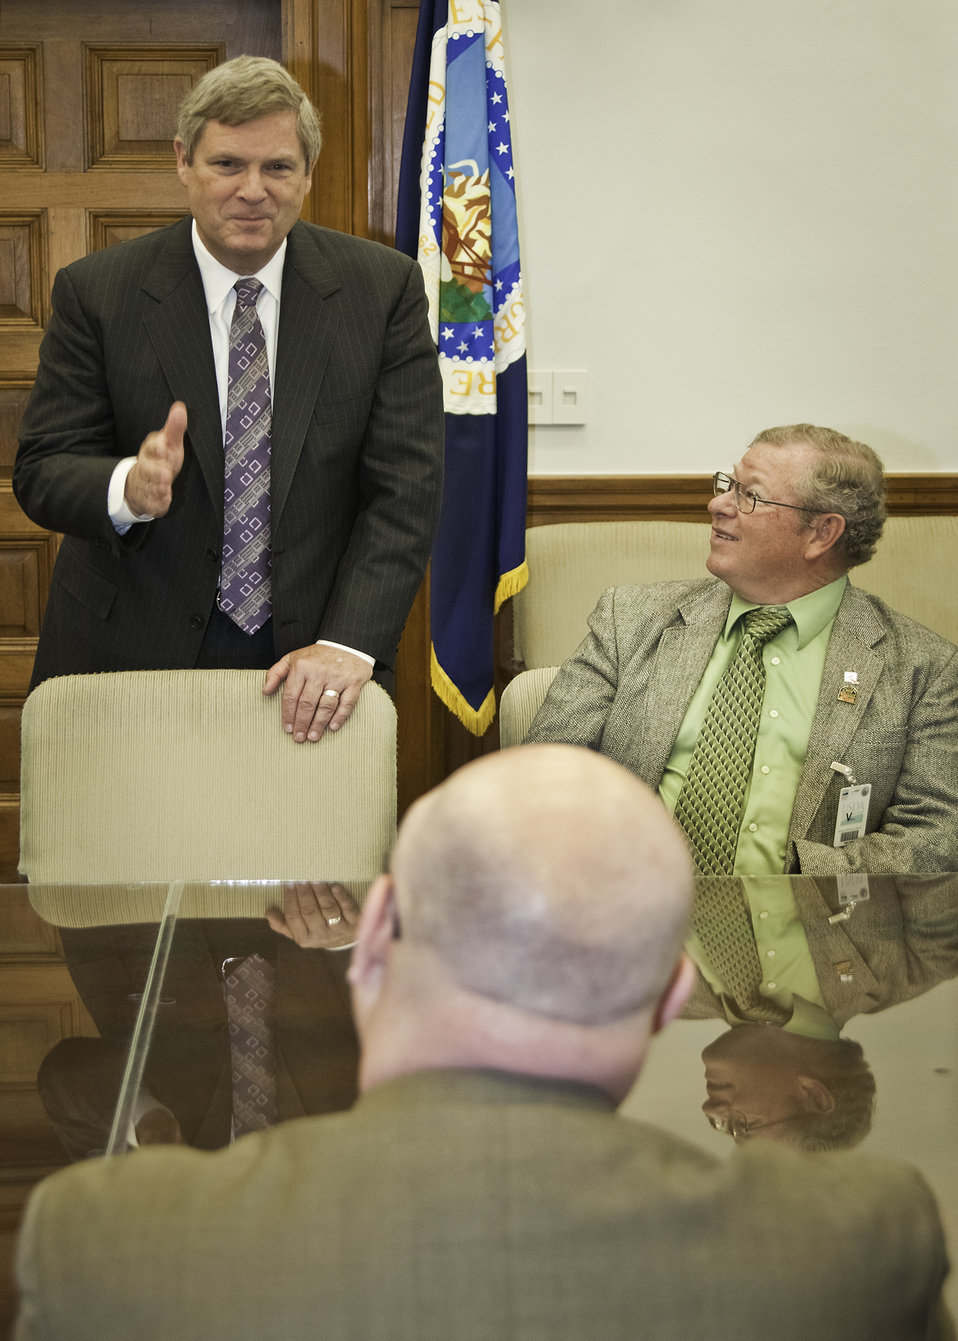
Agriculture Secretary Tom Vilsack stresses a point with Troy Bredenkamp a member of the Colorado Farm Bureau during the Colorado Farm Bureau’s visit to the United Sates Department of Agriculture, Wednesday, March 30, 2011. Next to Secretary Vilsack is Corlyle Currier, Vice President of the Colorado Farm Bureau.